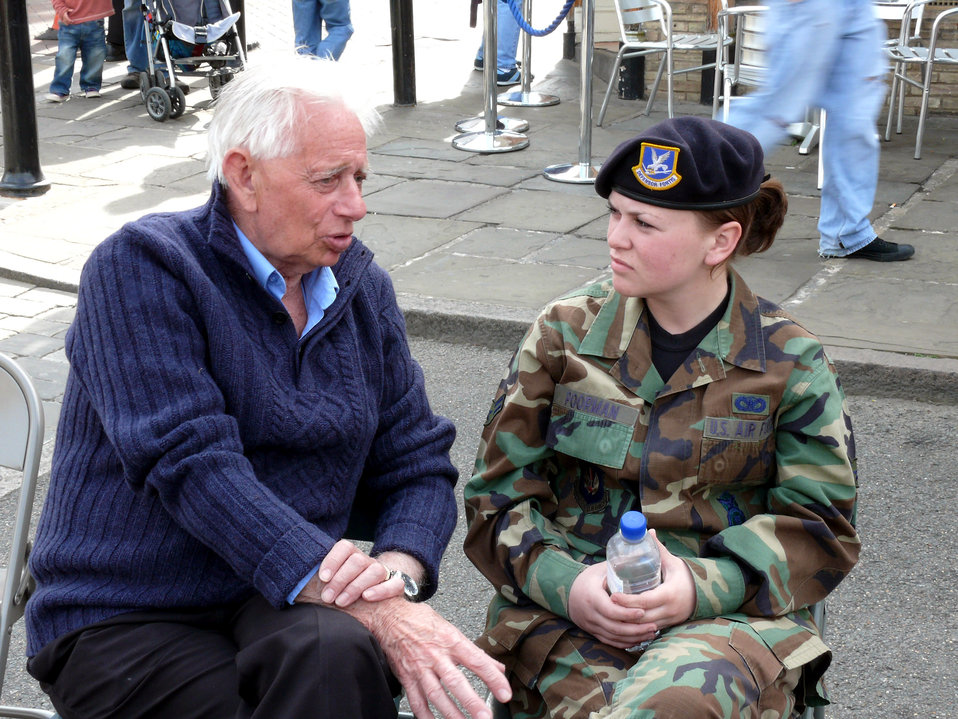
Airmen in UK celebrate Jamestown's 400th with Brit citizens

Airman 1st Class Katie Poorman chats with retired Royal Navy Lieutenant Commander Don Vine May 8 at the America 400 celebration in Bury St. Edmunds, United Kingdom. The celebration is in remembrance of the 400th Anniversary of Jamestown, Va., the first permanent English settlement in America.